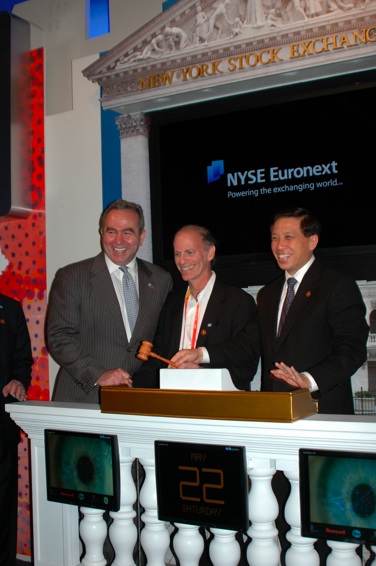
Assistant Secretary Campbell Takes His Turn at NYSE

Assistant Secretary of State for East Asian and Pacific Affairs Kurt Campbell takes his turn at the New York Stock Exchange Display at the USA Pavilion, part of the 2010 World Expo in Shanghai, China, May 22, 2010.